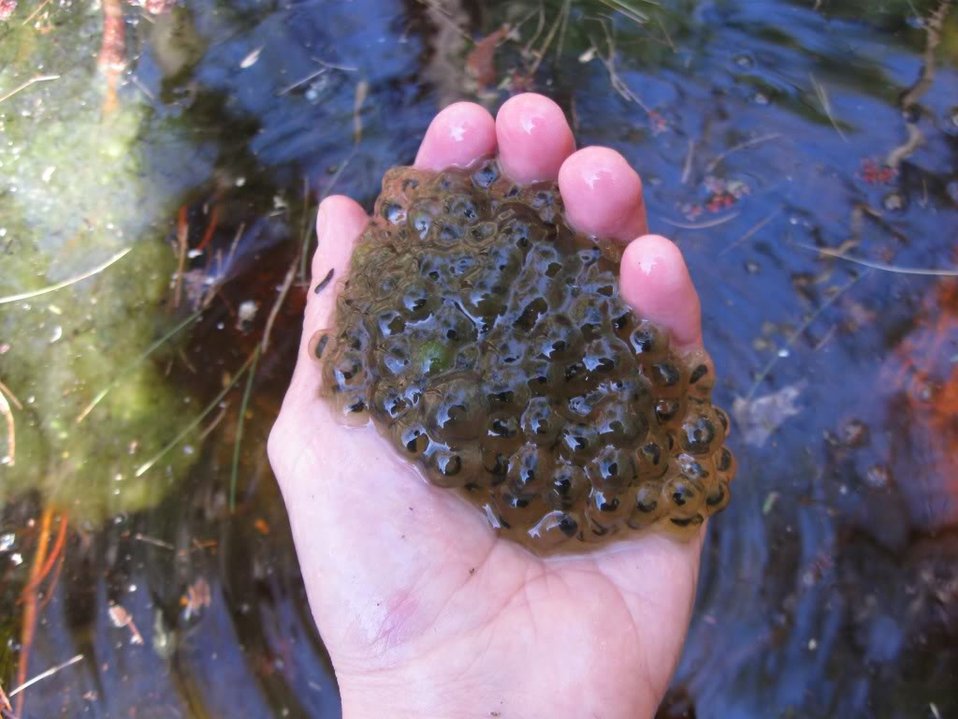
Wood frog egg mass at Assabet River National Wildlife Refuge.

Credit: Zachary Cava/USFWS

Assabet River National Wildlife Refuge is part of the Eastern Massachusetts National Wildlife Refuge Complex.